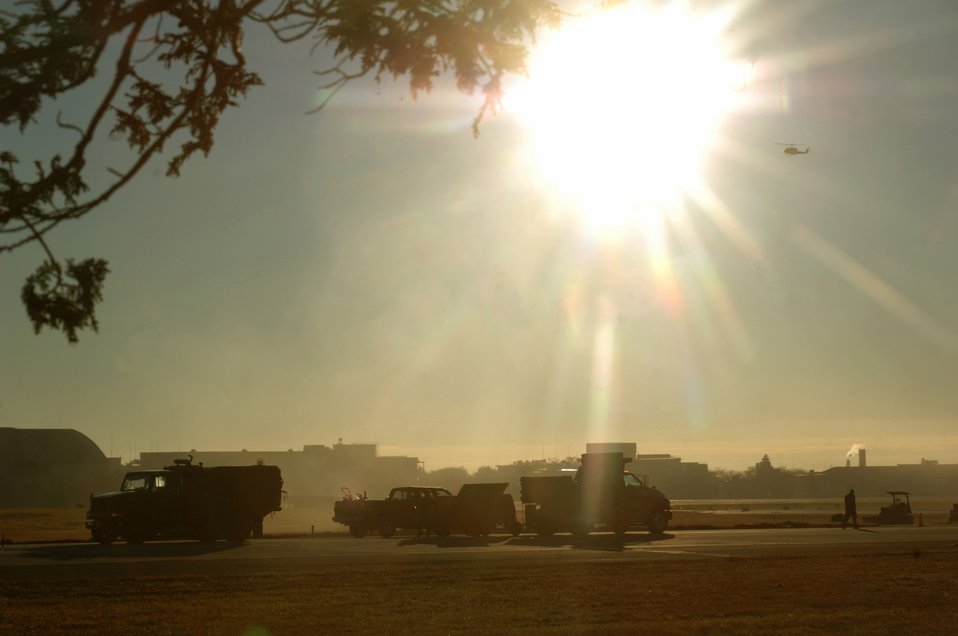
Morning inspection

YOKOTA AIR BASE, Japan (AFPN) -- Airmen conduct an early-morning inspection on the flightline. They are trained to deploy into bare-base locations, assess airfield capabilities, prepare aircraft landing areas, clear obstacles, install emergency airfield lighting systems and repair airfield damage. The Airmen are members of the 374th Civil Engineer Squadron.